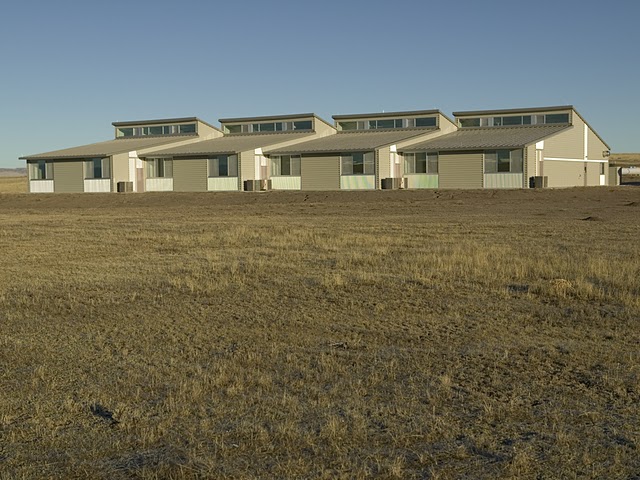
National Black-footed Ferret Conservation Center